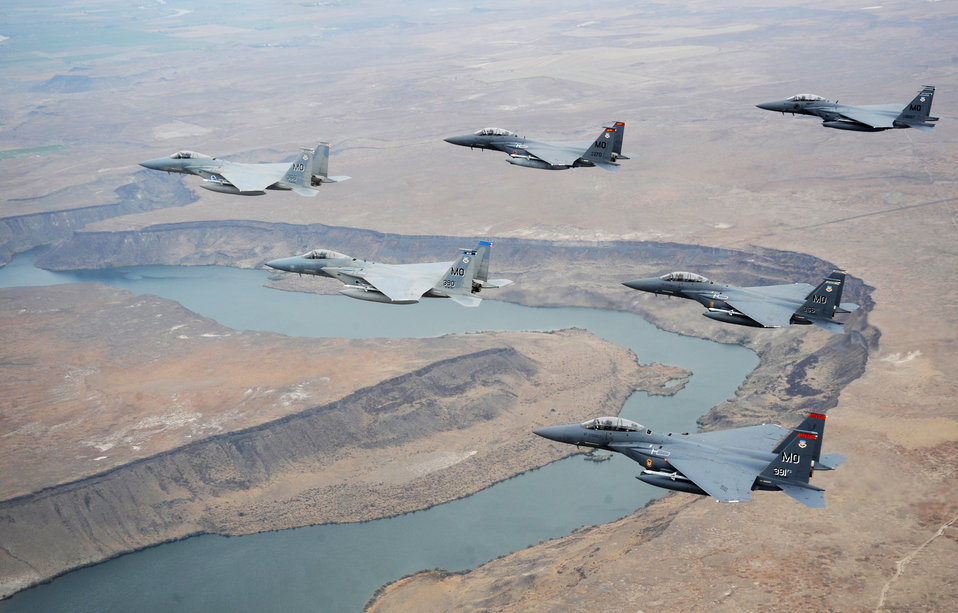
Flying over the Sawtooth Mountains

A six-ship formation of F-15C Eagle and F-15E Strike Eagles from the 366th Fighter Wing at Mountain Home Air Force Base, Idaho, fly over the state Oct. 13, 2009.